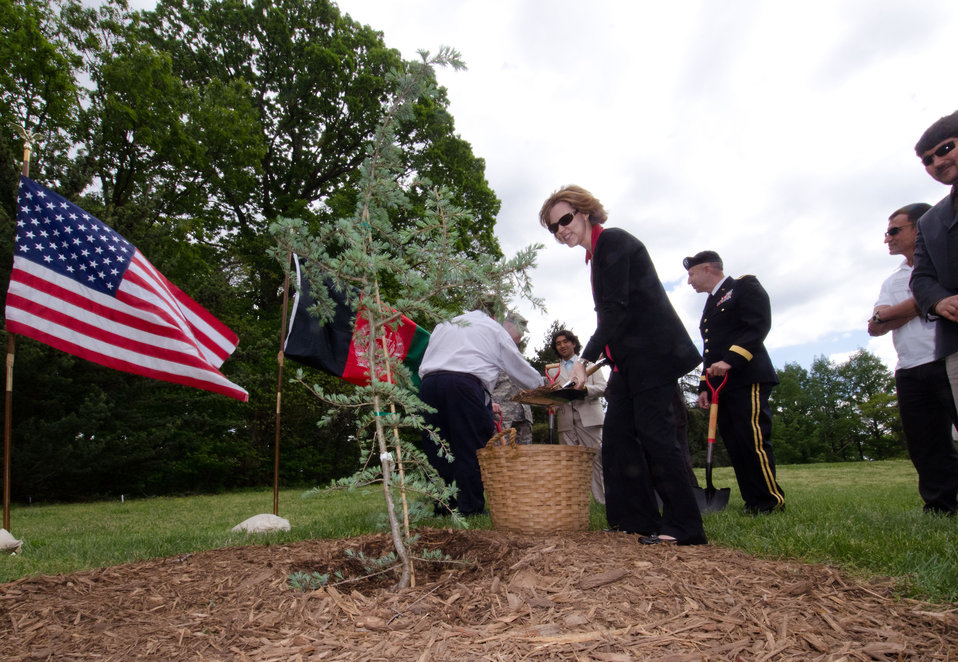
Agriculture Deputy Under Secretary of Farm and Foreign Agricultural Services Darci Vetter added the final shovel of mulch during the Arbor Day tree planting of a Cedrus deodara ('Karl Fuchs') at the U.S. National Arboretum, on Friday, April 29, 2011 in Washington, DC.